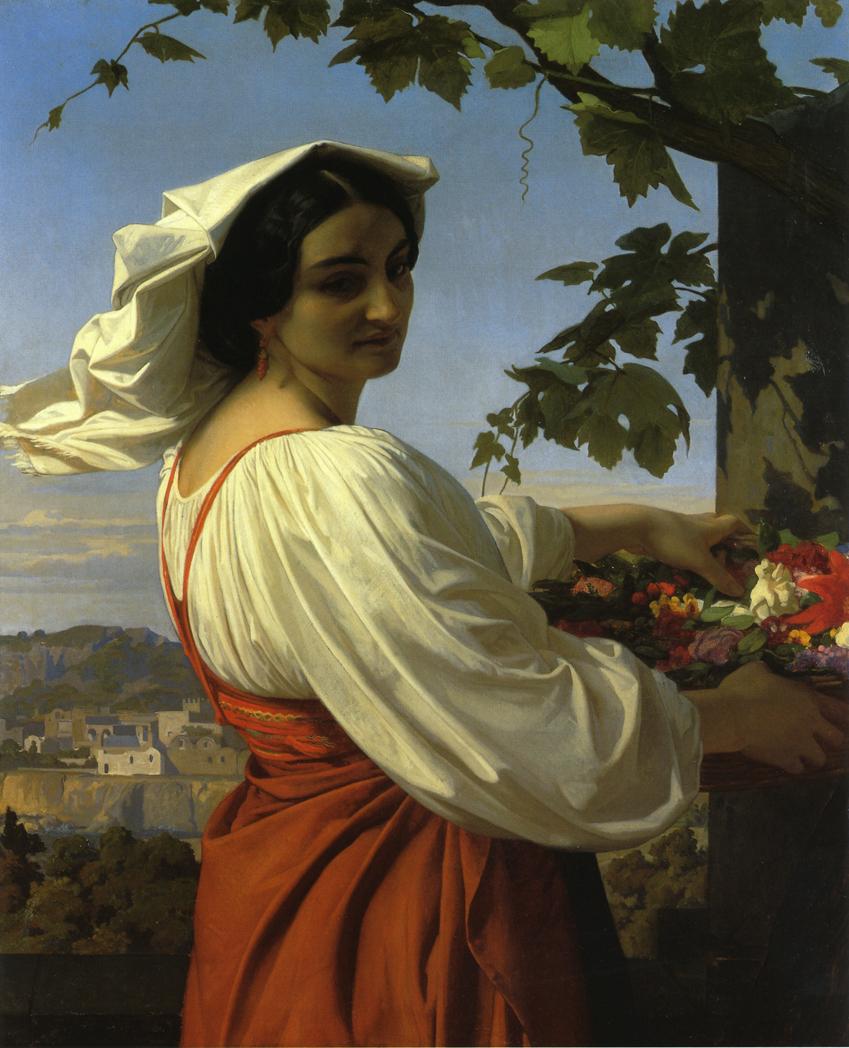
Français : La chiarrucia - Alexandre Cabanel